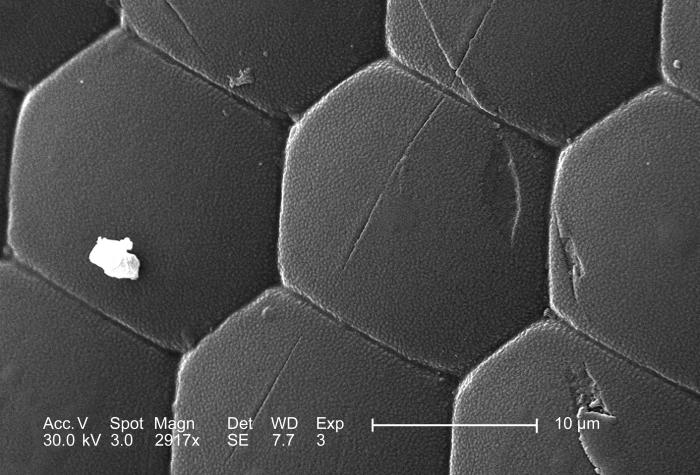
This scanning electron micrograph (SEM) depicted a moderately magnified view of the surface of a Western honeybee's, Apis mellifera, compound eye. Each of the repeating hexagonal-shaped subunits is called an 'ommatidium'; Magnified 2917x.